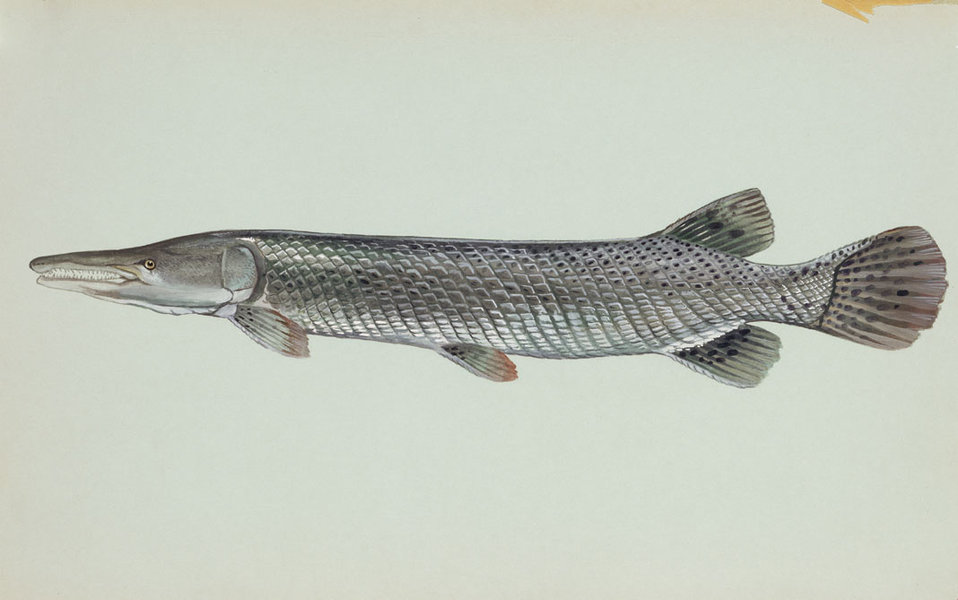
Alligator gar

Scans of artwork commissioned by the Fish and Wildlife Service in the 1970's. Original art is kept at DC Booth Fish Hatchery in Spearfish, SD.